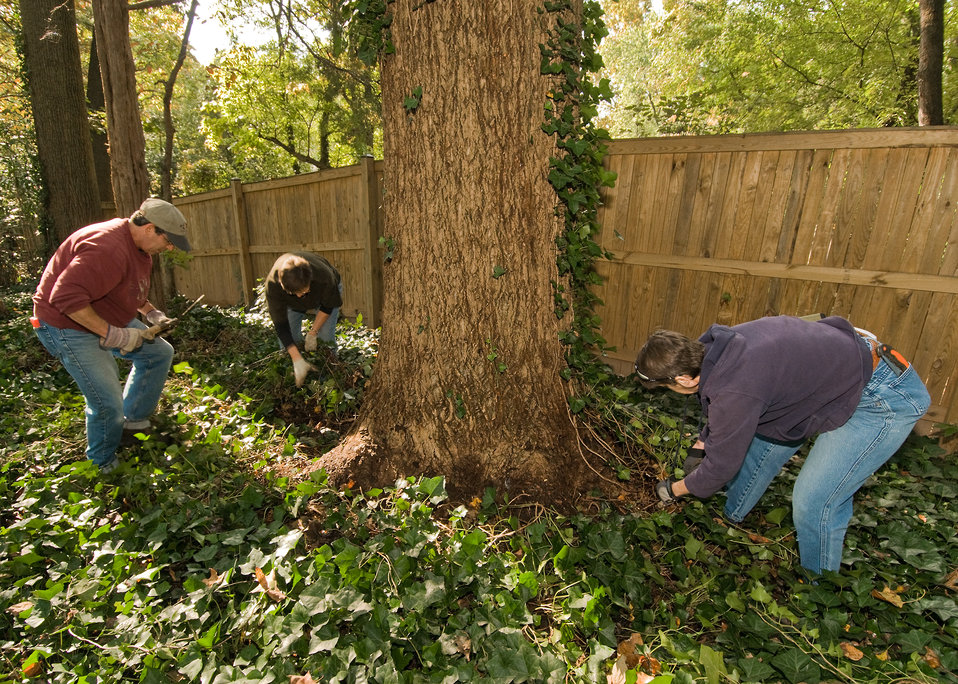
Howard Hankin, Agricultural Economist (left), Margaret Spinelli (center), and Lyn Gillespie (right), National Construction Engineer, Natural Resources Conservation Service prune ivy away from trees at “Eight Oaks” the home of Dr. Hugh Hammond Bennett the first Chief of the Natural Resources Conservation Service then the Soil Erosion Service at Dr. Bennett’s home in McLean, Virginia on Friday, October 15, 2010 as part of the celebration for the 75th Anniversary of the Natural Resources Conservation Service. Employees and family members of the Natural Resources Conservation Service landscaped, pruned and planted oak seedlings, azaleas and phlox all important elements of the landscape when Dr. Bennett lived at “Eight Oaks.” USDA Photo 10di1523-21 by Bob Nichols.